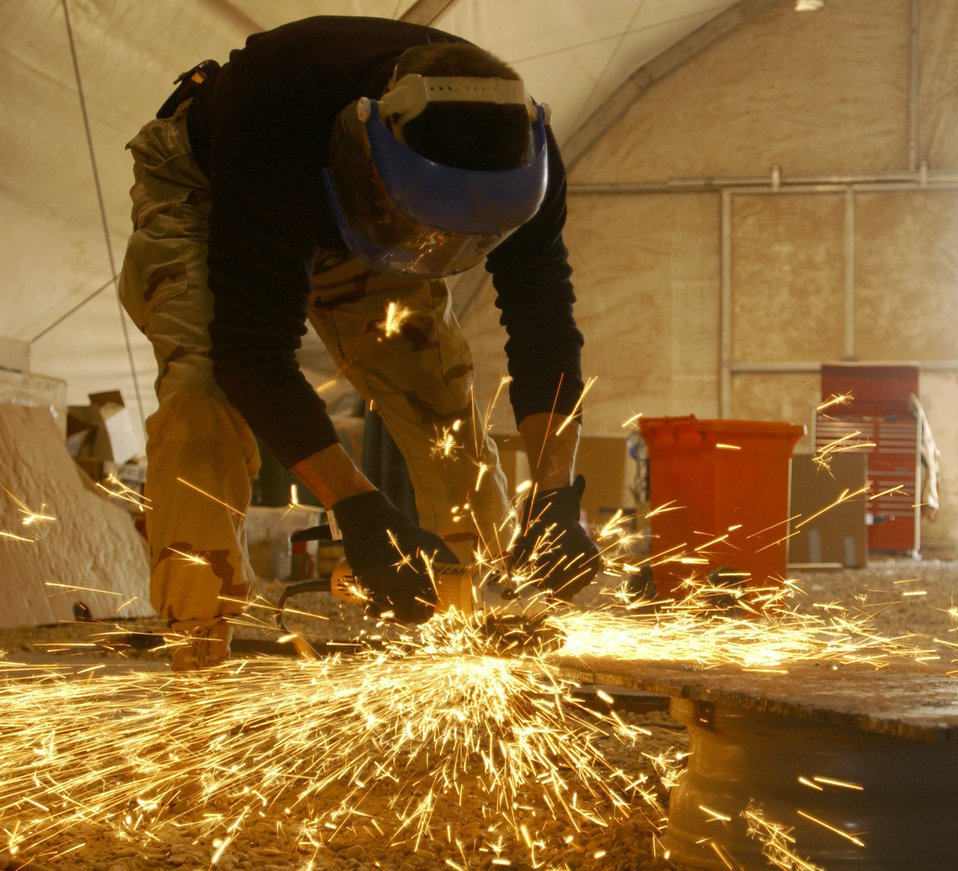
When sparks fly

BAGHDAD INTERNATIONAL AIRPORT, Iraq -- Tech. Sgt. Mark Sauerwald grinds a steel plate for armor protection on a 5-ton truck Jan. 16. Sergeant Sauerwald is a vehicle mechanic with the 447th Expeditionary Logistical Readiness Squadron here.